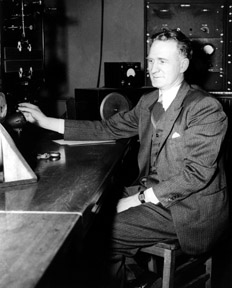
Walter H. Zinn at the controls of CP-2.